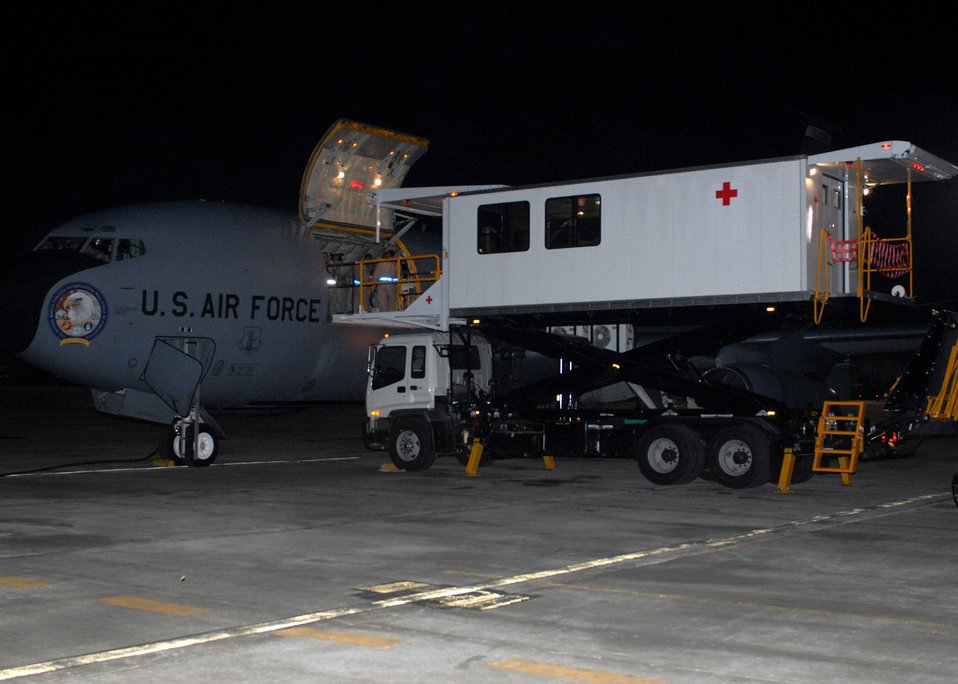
Bagram first to operate new transporter

An Air Force high deck patient loading platform aligns with a KC-135 Stratotanker to load patients to be flown to Landstuhl Army Regional Medical Center, Germany, here April 9. The new HDPLP, a special-purpose vehicle which limits the time a patient is exposed to outside elements, is one of three vehicles in the Air Force inventory.